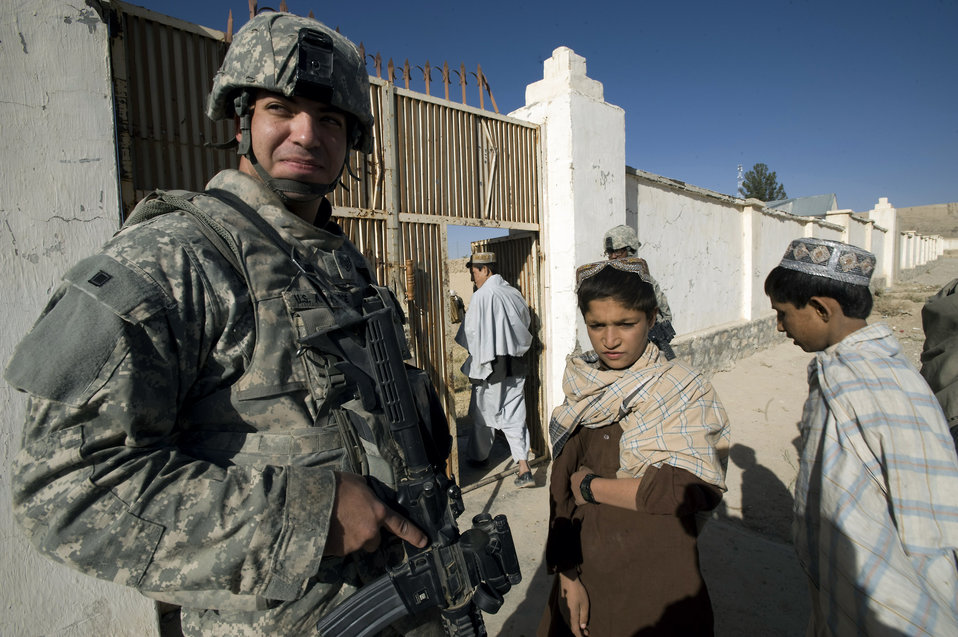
Veterinary care helps build relations with nomadic tribe

Staff Sgt. Joe Montano provides security at the entrance of the Kuchi compound during a veterinary medical outreach conducted by the Zabul Provincial Reconstruction Team Oct. 18 in Qalat, Afghanistan. The PRT members offered free deworming and vitamin supplements during the VMO. Sergeant Montano provides security for the PRT when they are working within the province. He is an F-15 Eagle crew chief deployed from Nellis Air Force Base, Nev.